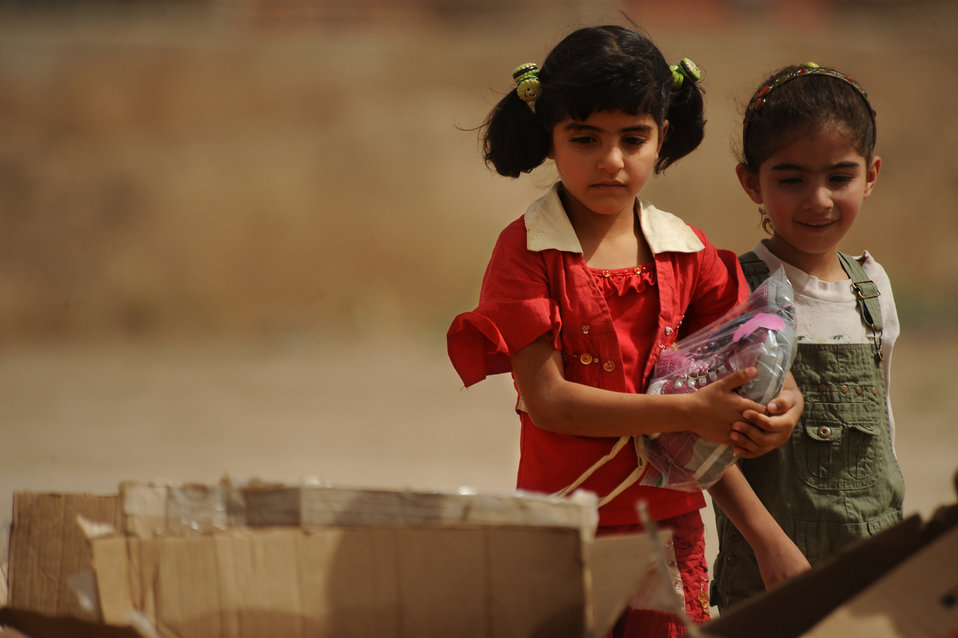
Sather Airmen foster relationships with local community

Two young Iraqi girls look through boxes of toys and gifts donated by Airmen June 6 at Sather Air Base, Iraq. The gifts were donated and delivered as part of the Good Neighbor Program at Sather AB.